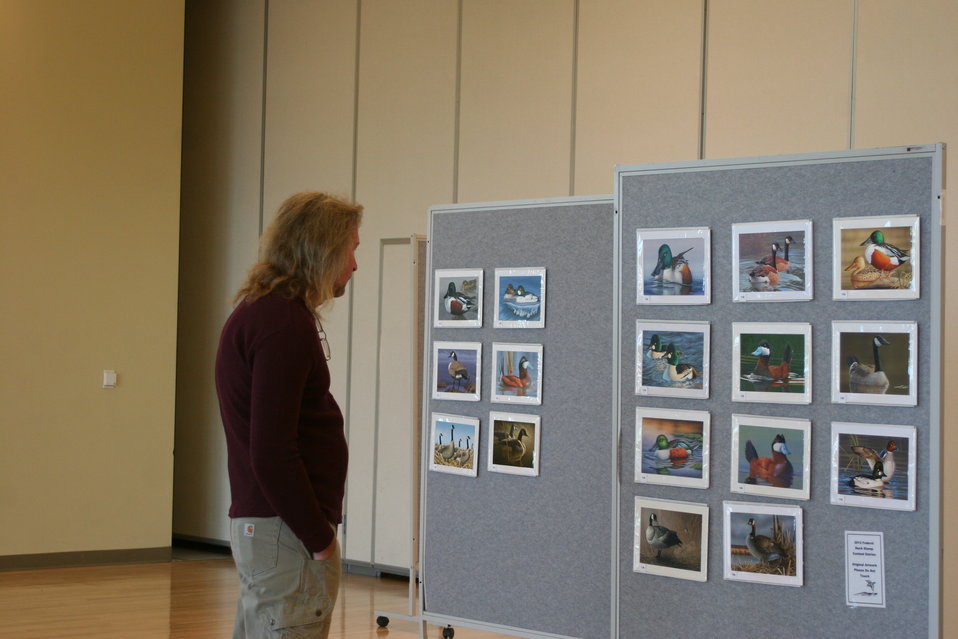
Artwork Viewing

Photo Credit: Suzanne Fellows / USFWS
The U.S. Fish & Wildlife Service sponsored the 2012 Federal Duck Stamp Art Contest September 28 and 29 in Ogden, Utah, at Weber State University. A panel of five judges was responsible for choosing the art work used to design the 2013-2014 Migratory Bird Hunting and Conservation Stamp.